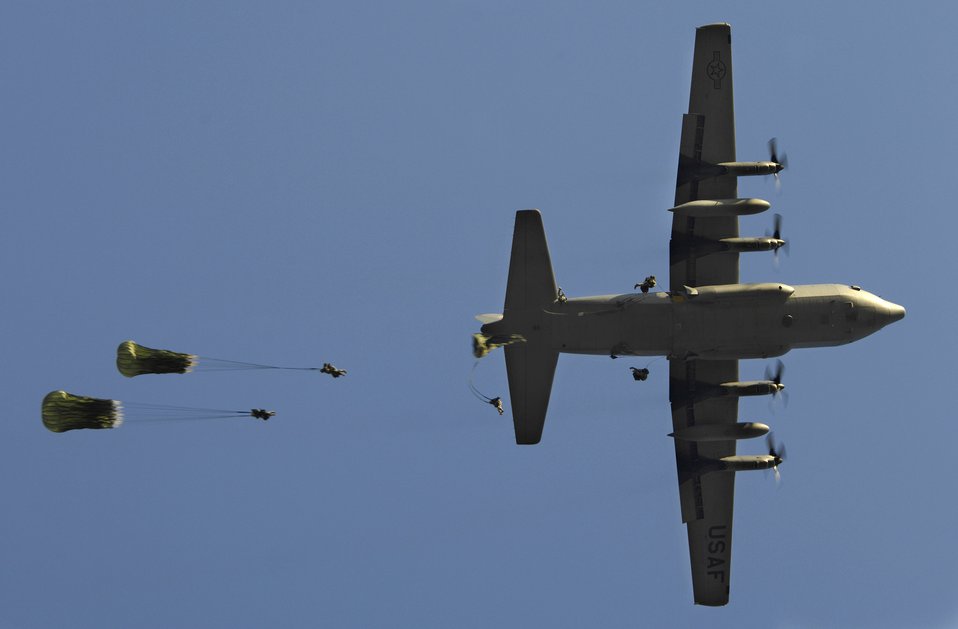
Hercules, Globemaster IIIs support joint training

Paratroopers from the 82nd Airborne Division jump from a C-130 Hercules during Joint Forcible Entry Exercise June 18 at Fort Bragg, N.C. The exercise is a joint airdrop exercise designed to enhance service cohesiveness between Army and Air Force members, allowing both services an opportunity to properly execute large-scale heavy equipment and troop movement.